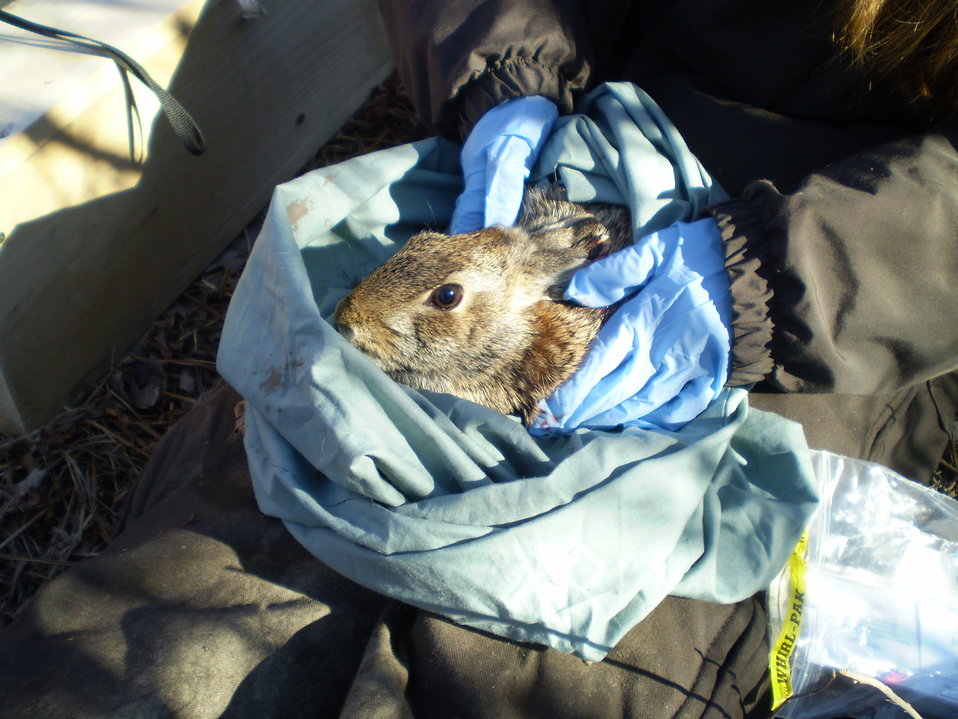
Finding New England cottontails

A cottontail that was trapped and is being quickly processed before being released back into its home.